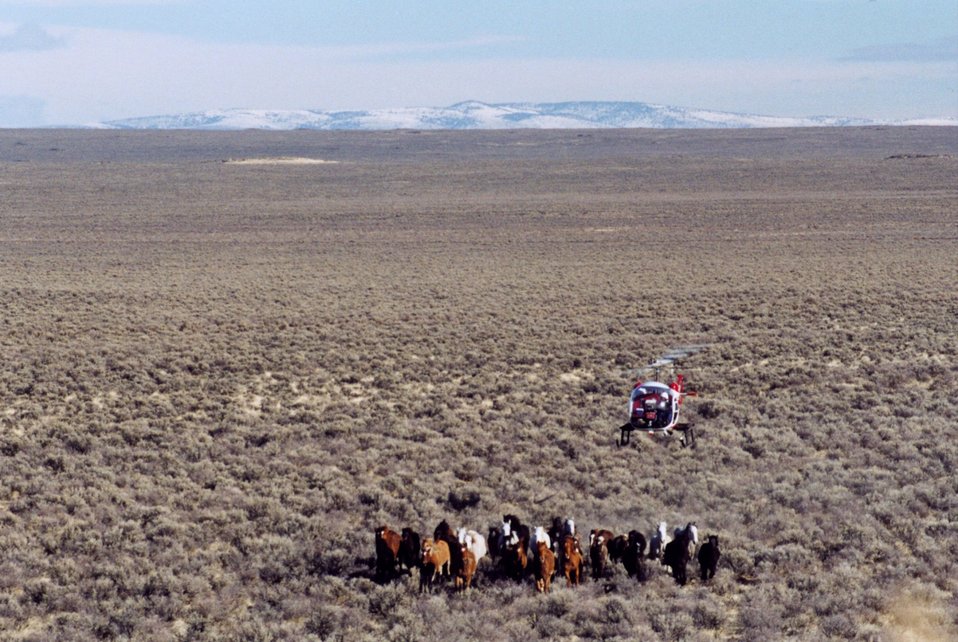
Heath Creek Wild Horse Management Heard Area.